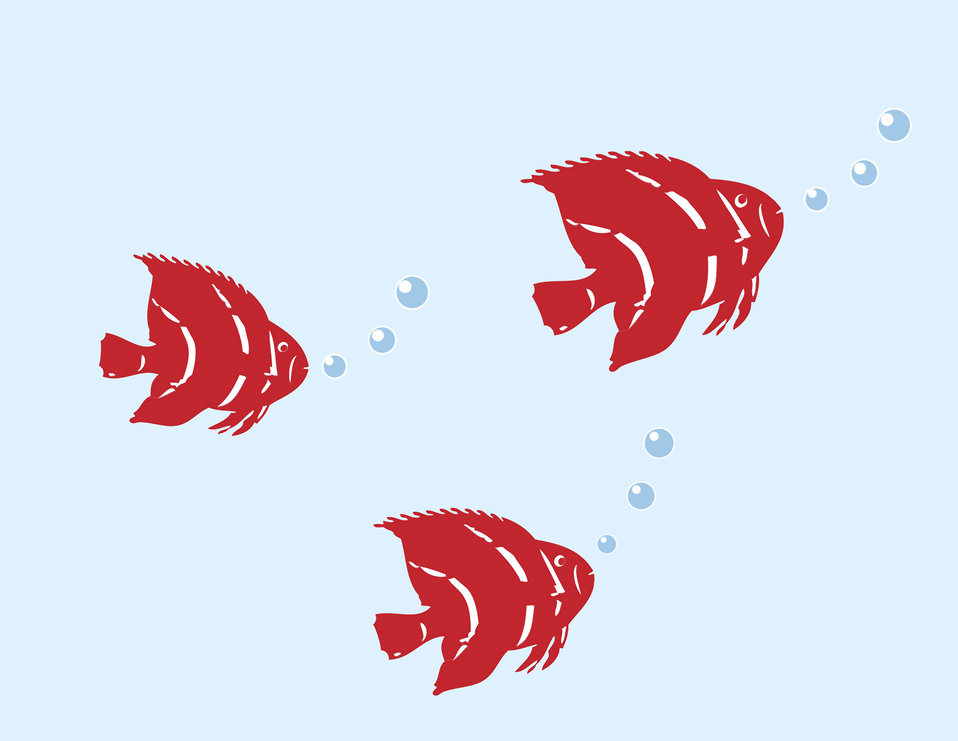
Red fishes

Illustration of three red tropical fishes swimming in the sea.